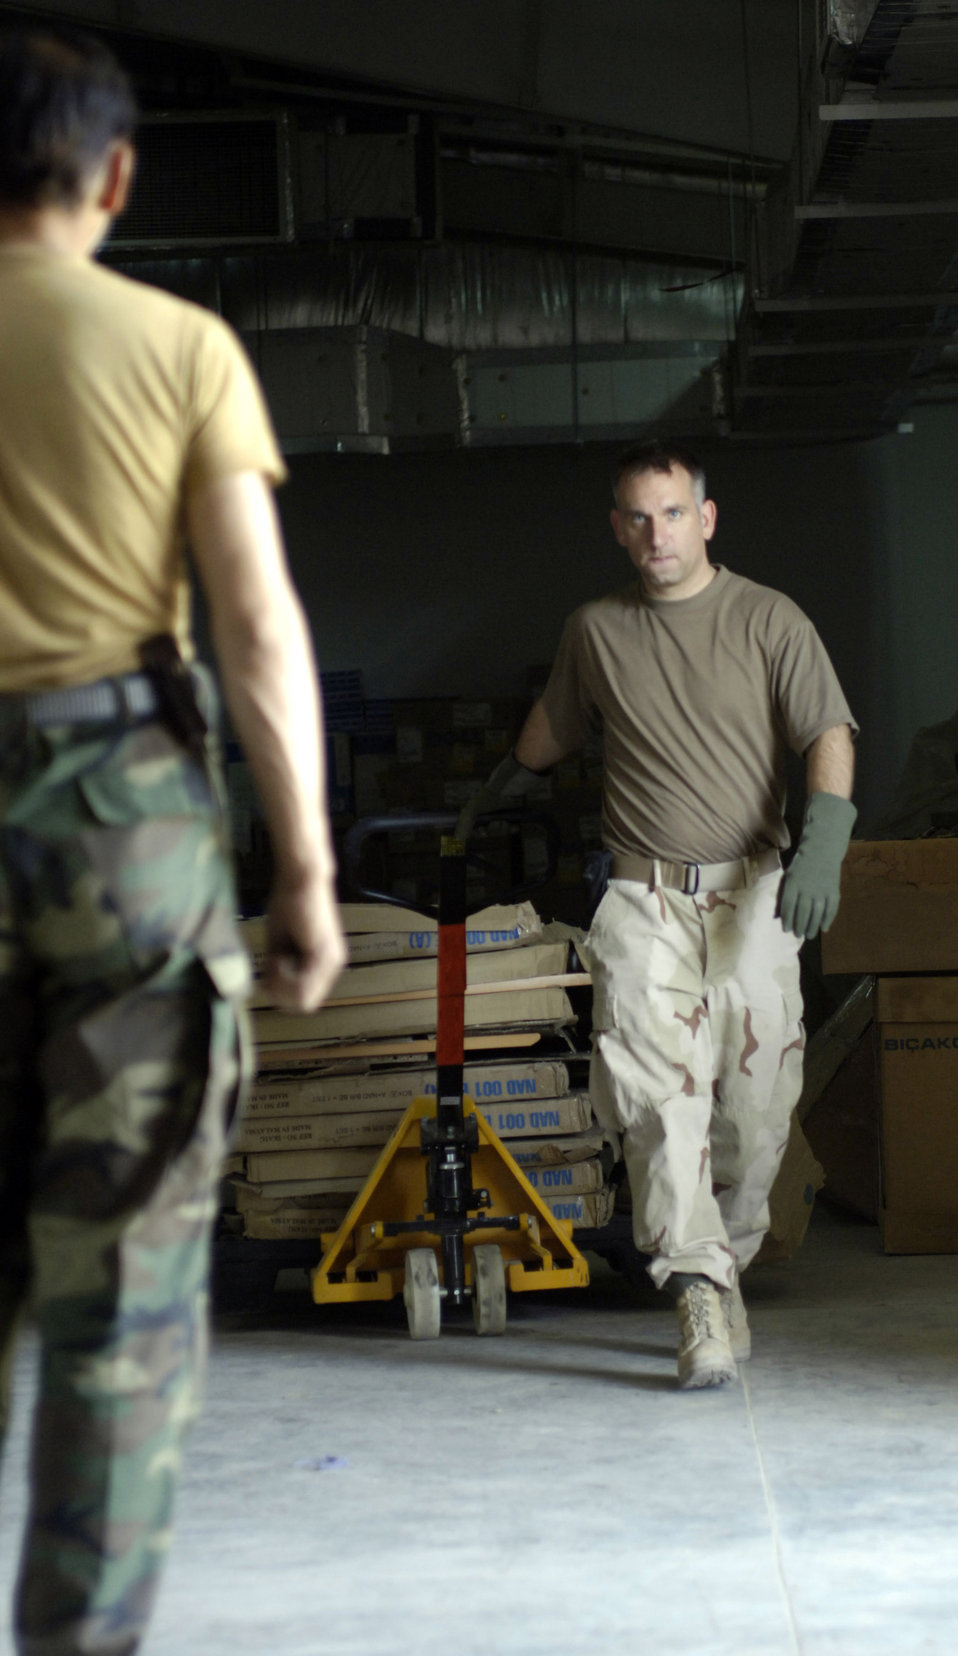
Airmen equip Afghan hospital with supplies, knowledge

Afghan National Army (ANA) Maj. Abdul Ghafar foreground) waits as his mentor U.S. Air Force medical logistics officer Capt. Jay Snodgrass wheels a pallet of hospital equipment out of their warehouse for installation in a newly built $6.5 million 50 bed ANA hospital on Saturday, August 18, 2007. The state-of-the-art facility is located on the ANA's Hero Camp, just outside of Kandahar Airfield in southern Afghanistan. Major Ghafar is the ANA's 205th Hero Corps warehouse commander. He is also in charge of all logistical support for the 205th. Captain Snodgrass is deployed from Moody Air Force Base, Ga., and is assigned, as an ANA mentor, directly to the 205th Corps. A team of U.S. military medical technicians and logisticians assigned to the Combined Security Transition Command-Afghanistan (CSTC-A) headquartered on Camp Eggers, Kabul, Afghanistan, traveled to Kandahar to assist ANA medical technicians from the 205th in standing up their new hospital. CSTC-A partners with the Government of the Islamic Republic of Afghanistan and the international community, to plan, program, and implement structural, organizational, institutional and management reforms of the Afghanistan National Security Forces. The 500 military members assigned to CSTC-A provide mentorship and training to the Afghan National Army and to the Afghan National Police in order to develop a stable Afghanistan, strengthen the rule of law, and deter and defeat terrorism within its borders.